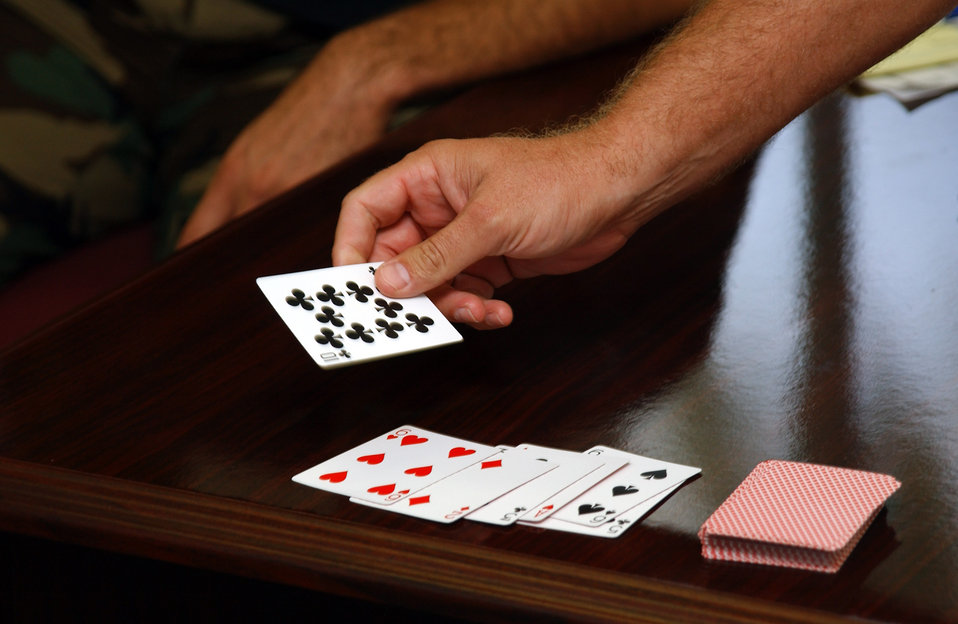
SOUTHWEST ASIA -- The luck of the draw can make a big difference in the number of push-ups participants are required to perform. As the game progresses throughout the deployment, high cards can boost a player's total by several hundred.